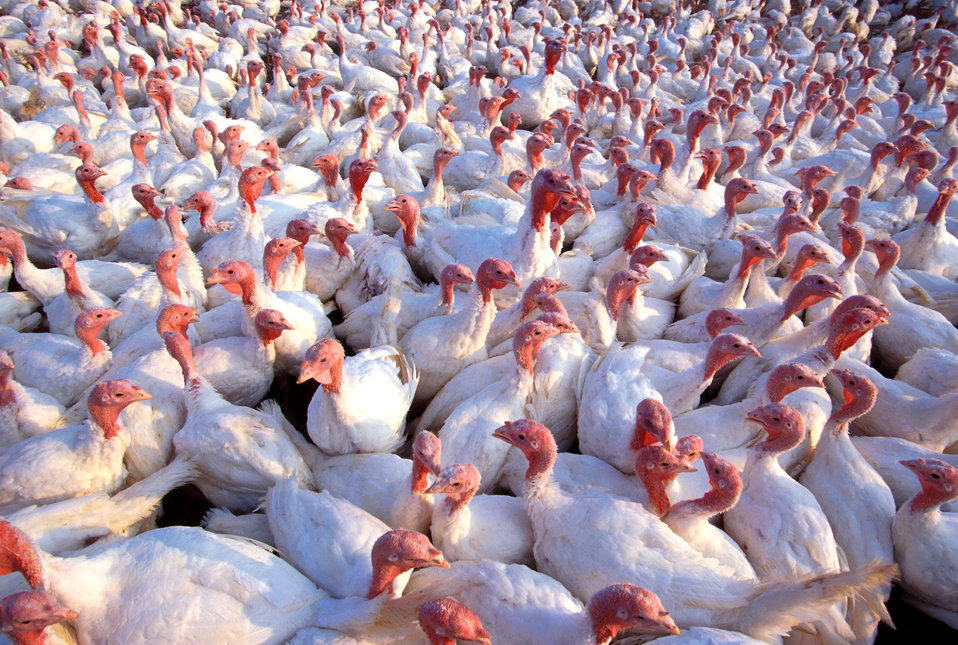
Turkeys being raised on a turkey farm.